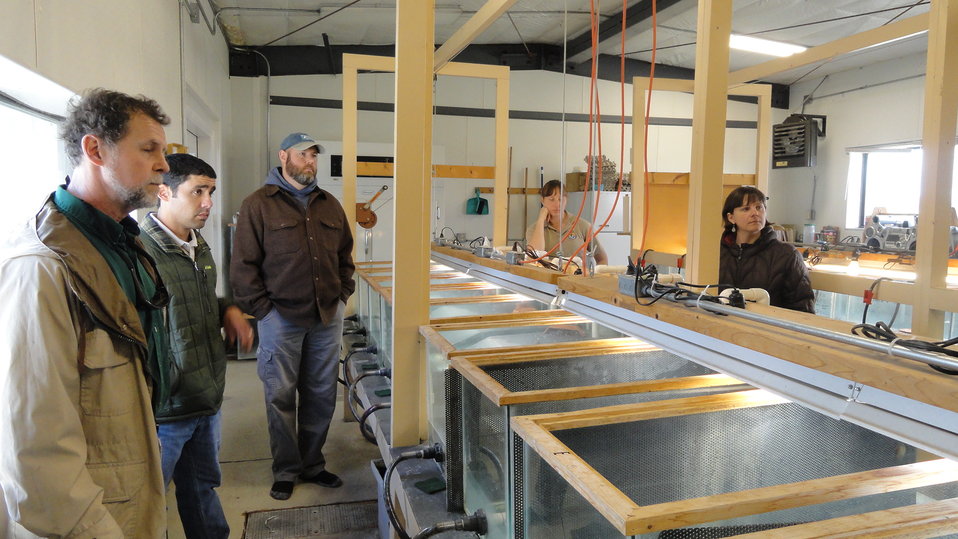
Visiting Saratoga National Fish Hatchery

In April of 2014, regional office employees visited Saratoga National Fish Hatchery to learn more about its efforts towards recovering the Wyoming toad (Bufo baxteri).

The hatchery adopted a unique role in becoming the first unit in the National Fish Hatchery System to become involved in rearing endangered amphibians. The Wyoming toad was a common sight on areas of the Laramie Plains, Albany County, Wyoming, into the early 1970s but the species' populations crashed in the mid-1970s. The Wyoming toad was listed as endangered by the U.S. Fish & Wildlife Service in January 1984. Found only in southwestern Wyoming, the Wyoming toad is considered the most endangered amphibian in North America. The hatchery maintains a captive population for breeding, rearing, and refugia, and the offspring from this program will be used for reintroduction efforts.